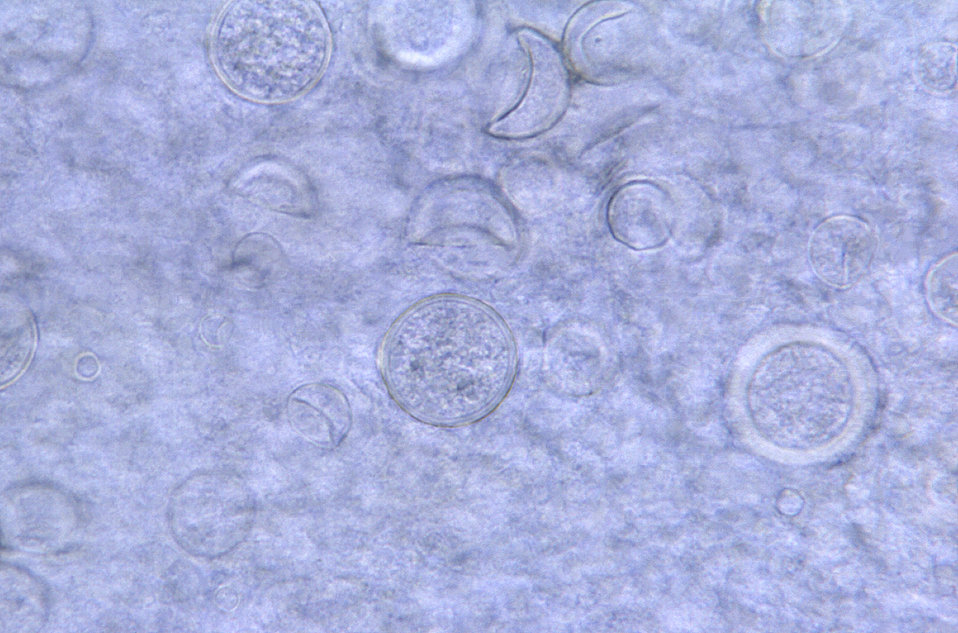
Magnified 500X, this photomicrograph revealed the presence of a number of round, thick-walled, spherule-staged Coccidioides immitis fungal organisms.